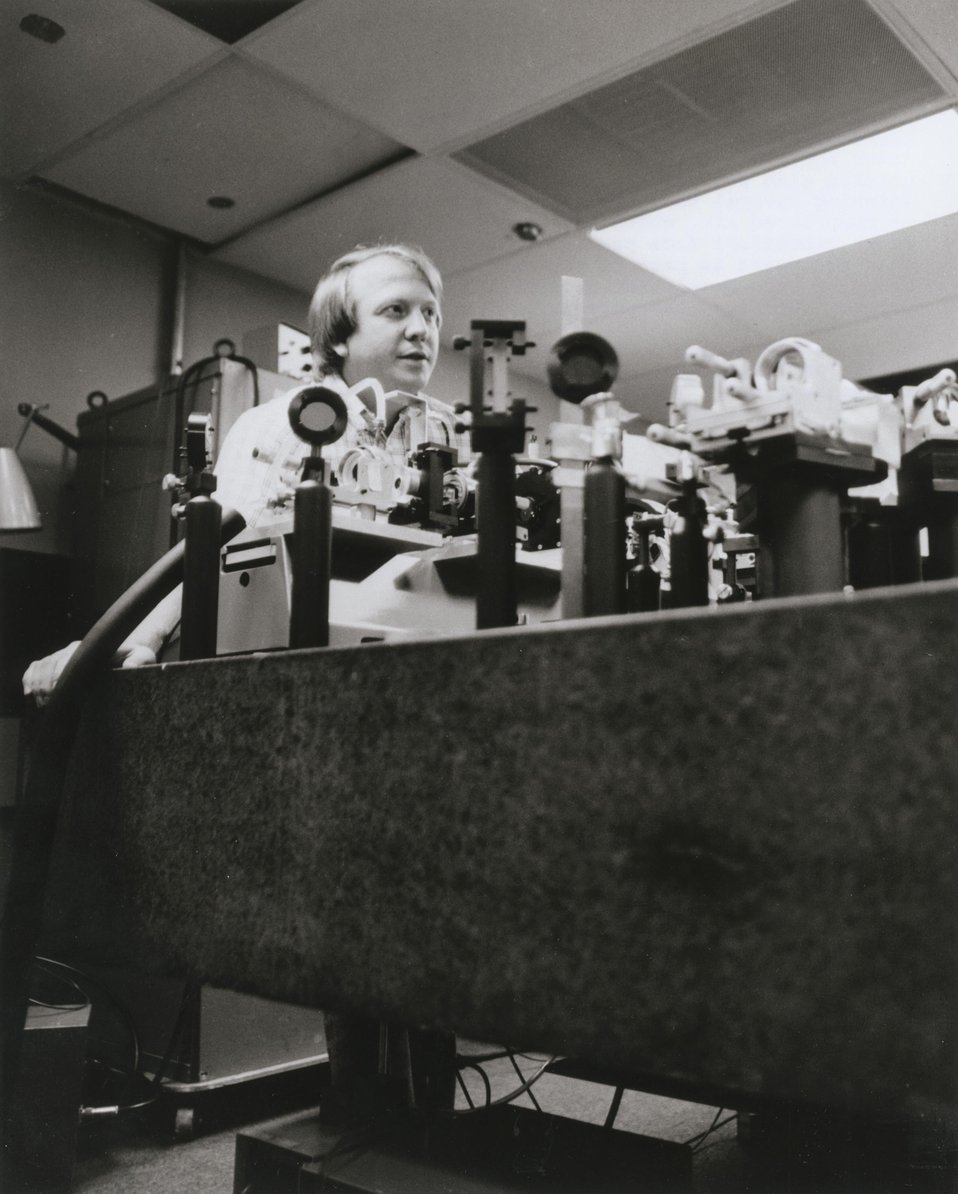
Dr. John Emmett looks over laser equipment that is mounted on a heavy granite slab for protection. c. 1973